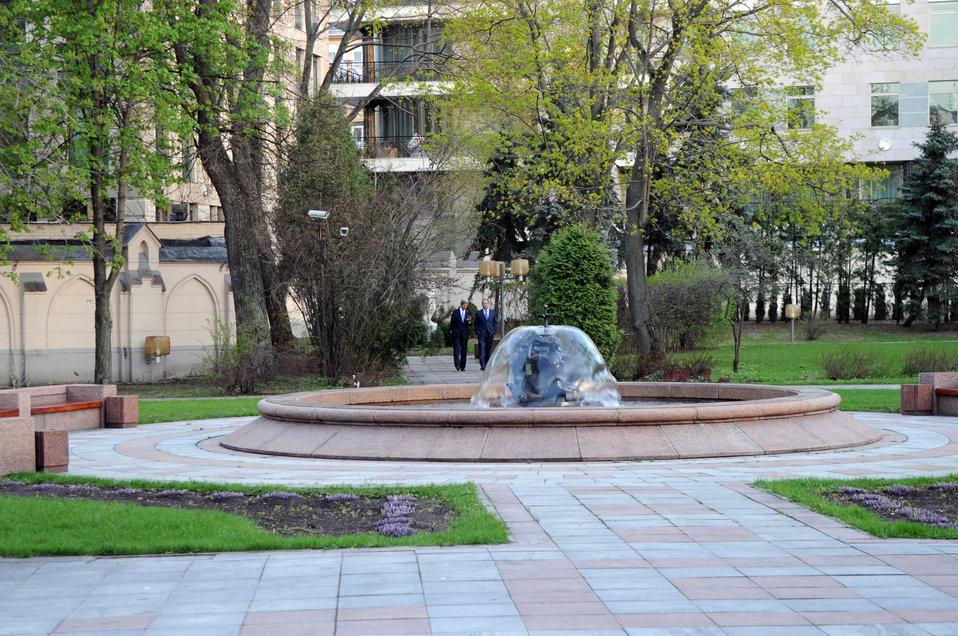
Secretary Kerry and Russian Foreign Minister Lavrov Walk and Talk

U.S. Secretary of State John Kerry and Russian Foreign Minister Sergey Lavrov walk and talk in the backyard of the Russian Ministry of Foreign Affairs' Guesthouse Osobnyak in Moscow, Russia, on May 7, 2013.